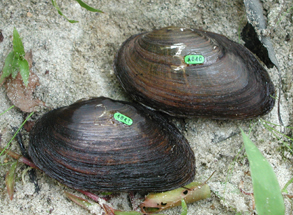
Prozac Exposure Found to Disrupt Mussel Reproduction

Eastern elliptio mussels such as the ones pictured above were studied for the effects of fluoxetine exposure on breeding.